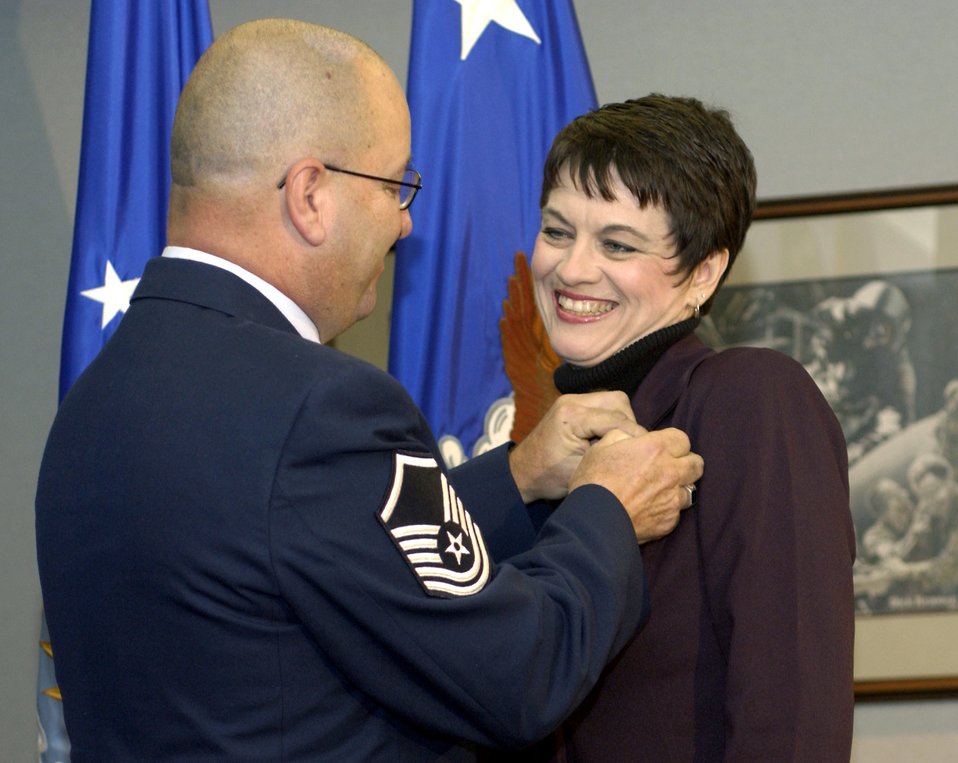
Air Force honors spouses with pin

WASHINGTON -- Master Sgt. Glenn Forney fastens a spouse pin on his wife, Sandra, during a Pentagon ceremony Nov. 8. The ceremony launched the spouse pin program. The pin is designed to recognize and thank spouses who support the efforts of Airmen stationed worldwide. Sergeant Forney is an Air National Guardsman with the 113th Logistics Readiness Squadron at Andrews Air Force Base, Md.